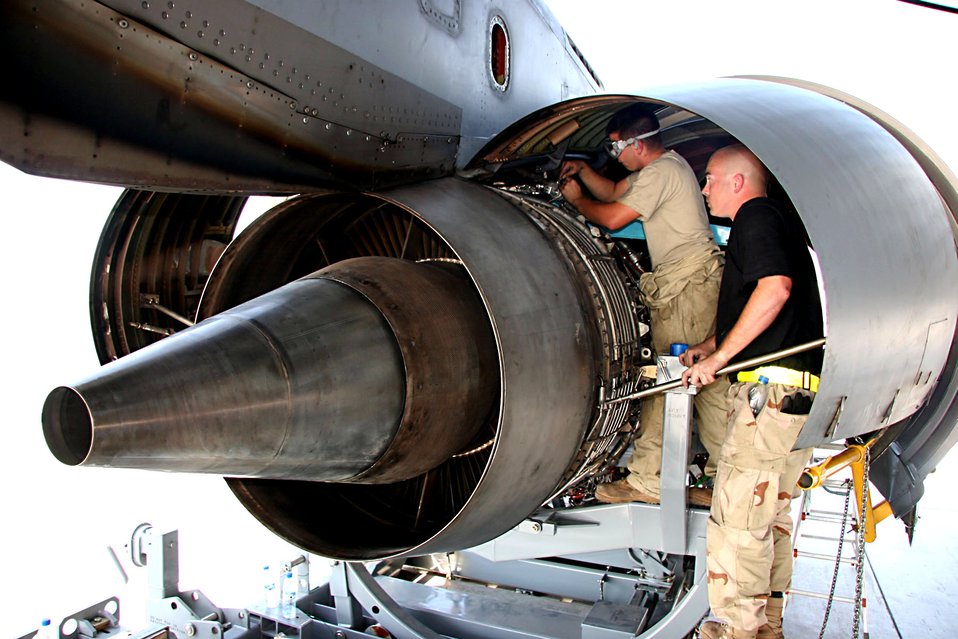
The job's almost done

Staff Sgt. Joseph Dodson assist as Airman 1st Class Louis Martens finishes installing safety wires on the engine mounts of a replacement engine on a KC-10 Extender Nov. 23. They are with the 380th Expeditionary Aircraft Maintenance Squadron at an air base in Southwest Asia.